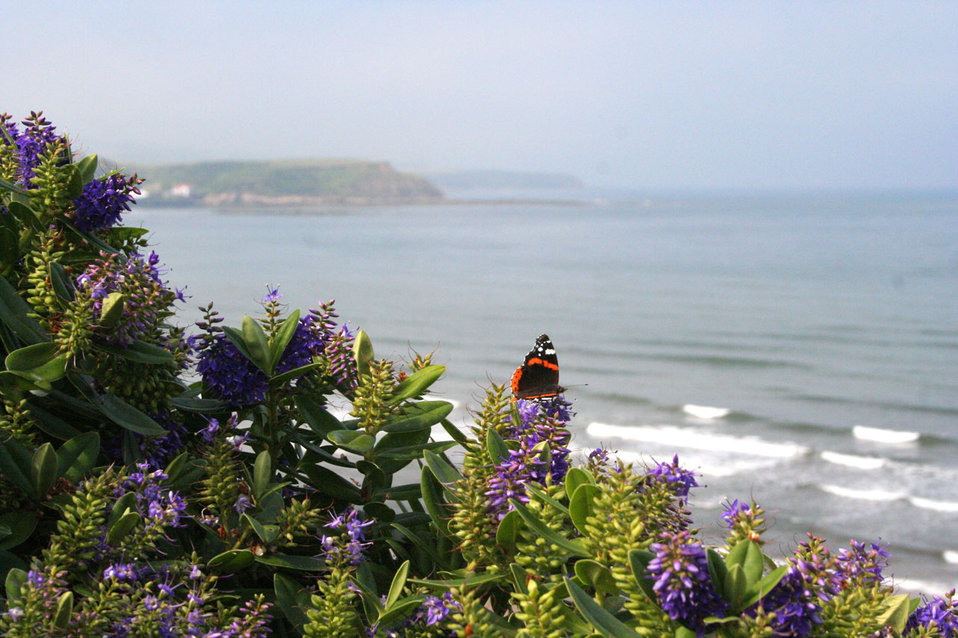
Butterfly on the coast

Red admiral on the flower with a sea in the background.